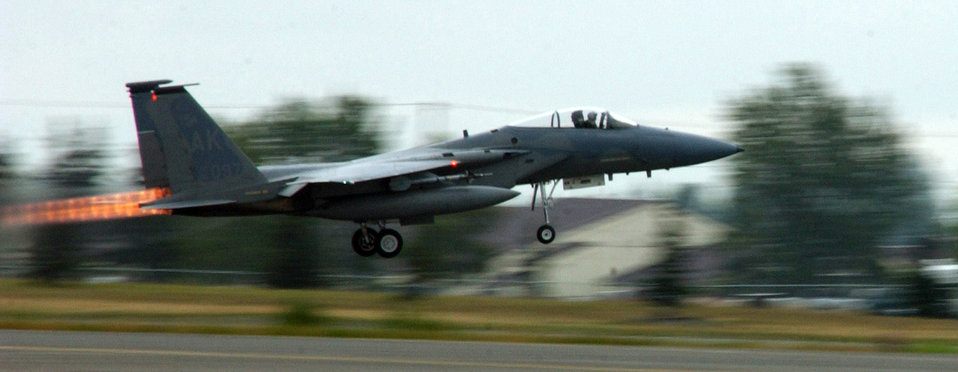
Air surveillance

ELMENDORF AIR FORCE BASE, Alaska -- An F-15 Eagle takes off for an alert response mission here Aug. 15 during Alaska Shield/Northern Edge 05. The exercise is the largest homeland defense/homeland security exercise conducted in Alaska. It is an opportunity within the state to exercise an integrated local, state and federal government response to a series of simulated emergencies.